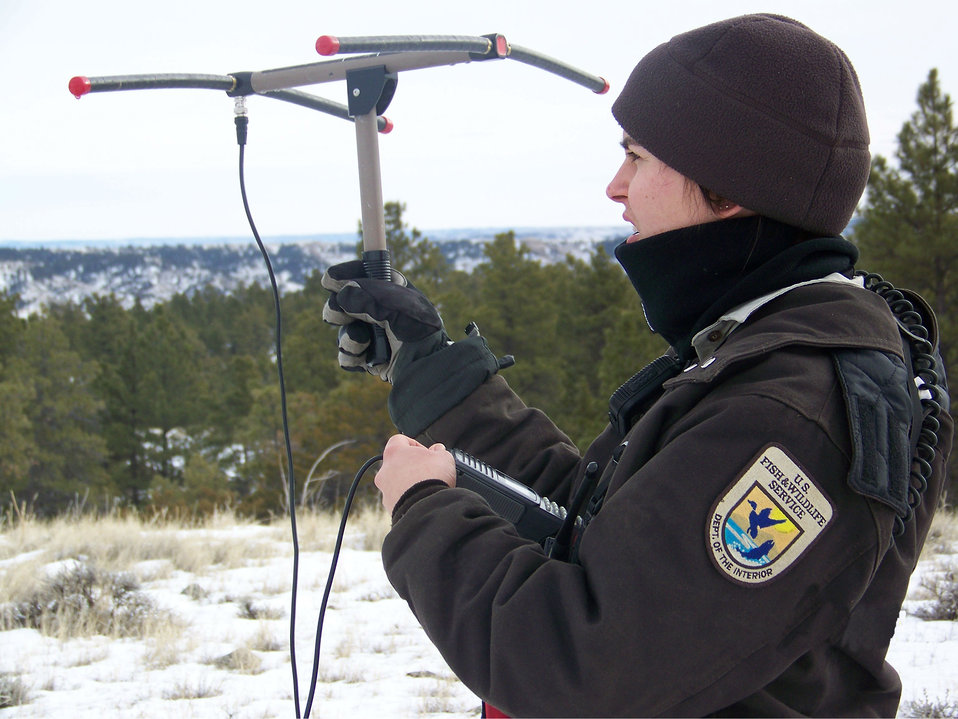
Tracking Mountain Lions

January 2013

Mary Jo Hill attempting to locate two radio collared mountain lions siblings (a male and a female) with telemetry equipment. They had been collared in December 2012 and we knew they were traveling with one more male sibling who was not collared. Using their locations we were able to track and collar the last male sibling.